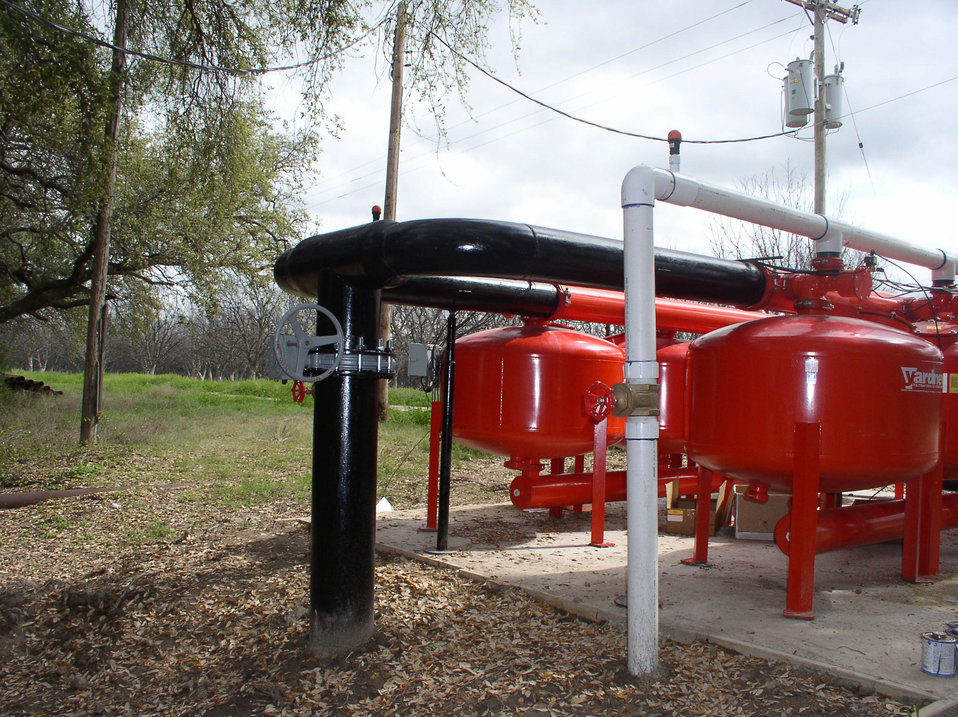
Arrowhead Farms of Zavala County, TX, now draws water from either the Nueces River (on other side of nearby trees) or deep water wells (brown pipes), either of which are filtered through sand tanks and pumped to the tree roots on Tuesday, April 6, 2010. Sediment free water is essential because, it will flow through various automated pressure and flow control valves, pipes, tubing and finally out emitters that drip water out of tiny holes at a rate of 1 gallon/hr. Each tree has several emitters under its drip line and over a typical 24 hour watering period will get just the right amount of water to survive Texas temperatures as best as possible. The farm has been owned by Mr. Akram Mohammad, a pecan farmer since 2005. The 719-acre farm with 10,000 trees, features some orchards with underground micro irrigation system that feeds water to the roots of 4,380 pecan trees on 146 acres. Mr. Mohammad said, “USDA (U.S. Department of Agriculture) was essential to my business and trees surviving the recent exceptional drought. The trees were stress free thanks to underground micro-irrigation. This is essential to the future growth of Texas agriculture and good for America.” U.S. Department of Agriculture’s (USDA) Environmental Quality Initiative Program (EQIP) awarded Mr. Mohammad a $130,000 grant in 2008. He provided $26,000 for the balance of the $156,000 total cost to install a 146-acre underground micro-irrigation for 4,380 trees.